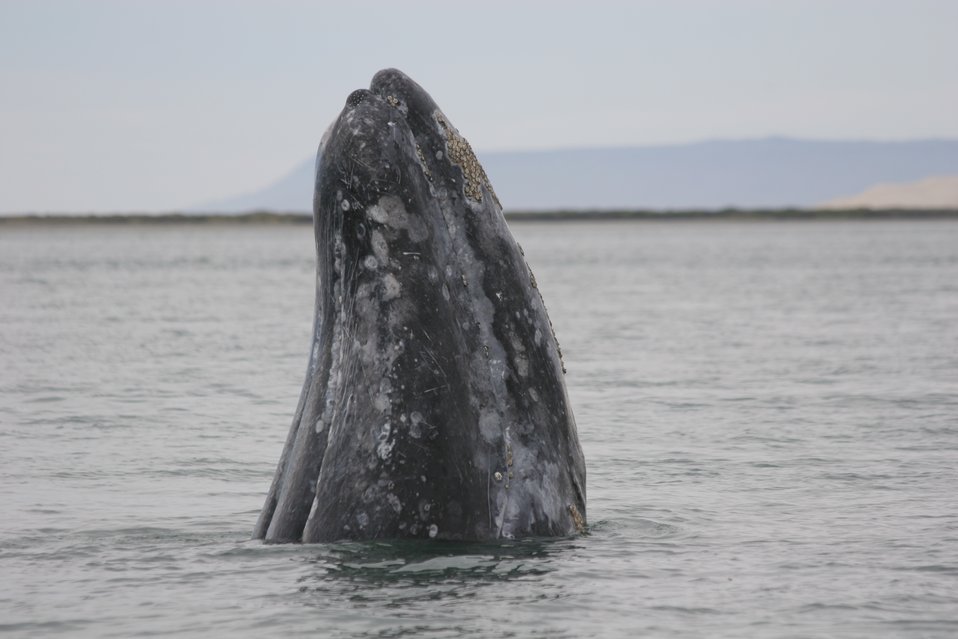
Gray whale spy-hopping. Note barnacles.